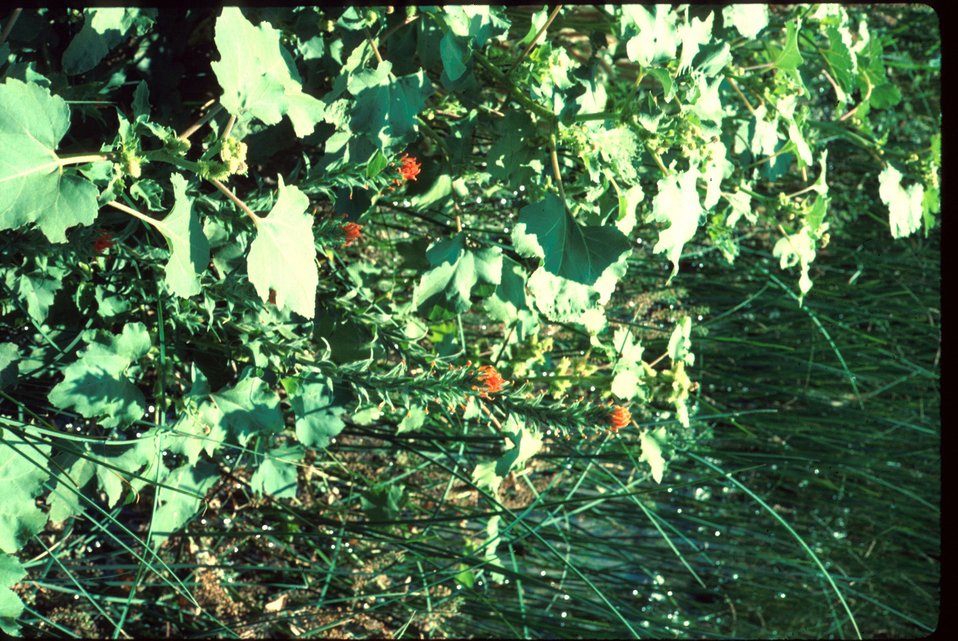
Castilleja exile Indian Paintbrush Wildflower